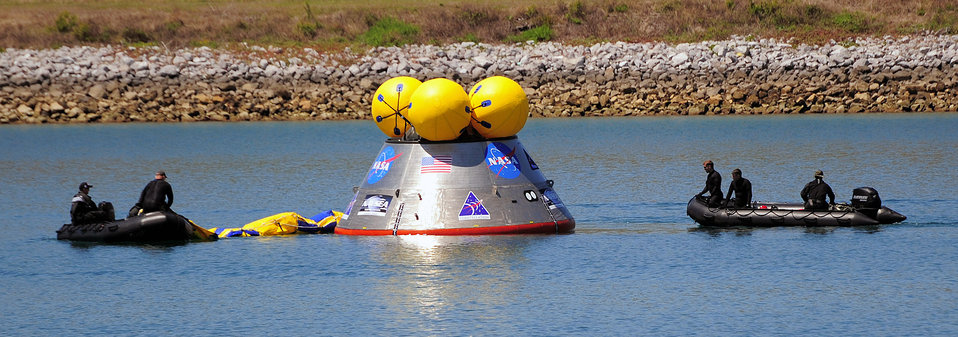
Pararescuemen conduct water test of new NASA capsule

Pararescuemen deploy an inflatable flotation collar during recovery testing on a mockup of the Orion crew exploration vehicle March 8 at the Trident Basin at Port Canaveral, Fla. The collar is designed both to stabilize the capsule after water landing and provide a platform for recovery personnel to stand on during the operation. Reservists from the Reserve's 920th Rescue Wing provide contingency medical and recovery support for all NASA shuttle launches.